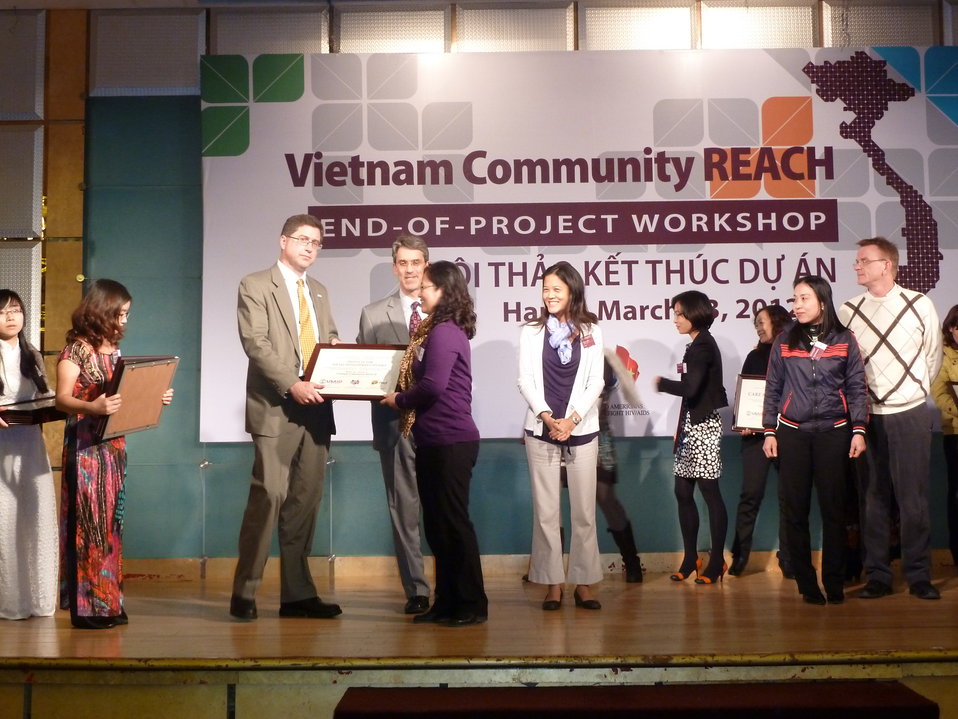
USAID, PEPFAR, and Pact award certificates to local and international partners for their work in addressing HIV in Vietnam

Community REACH project close-out with USAID and implementing partner, Pact